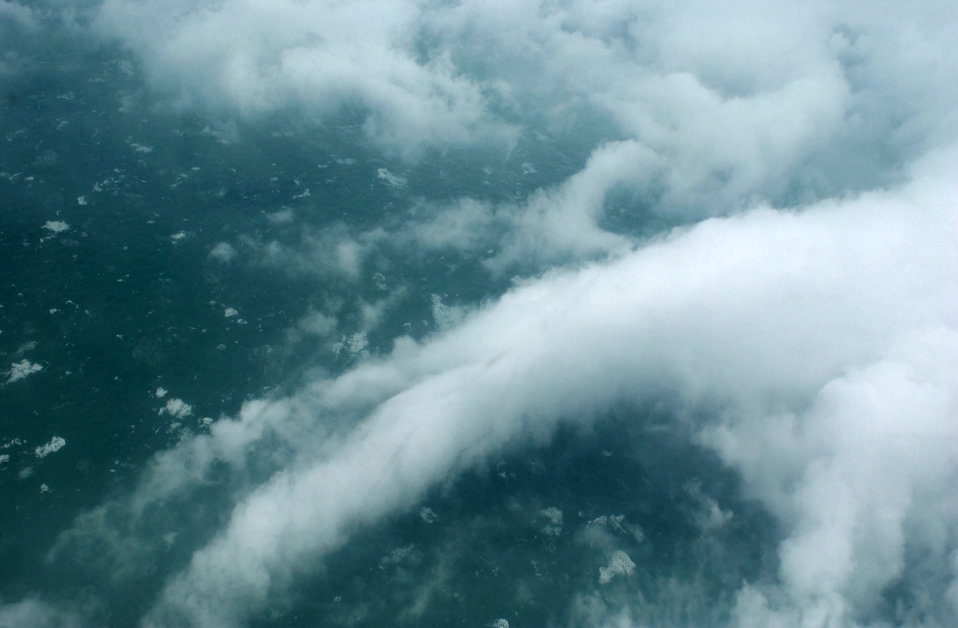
Hurricane Charley

OVER FLORIDA -- This view of the outer wall of the eye of Hurricane Charley was taken from a C-130H aircraft Aug. 13 at 3 p.m. With the information the 53rd Weather Reconnaissance Squadron collected, the hurricane was upgraded to a Category 4 storm Aug. 13.